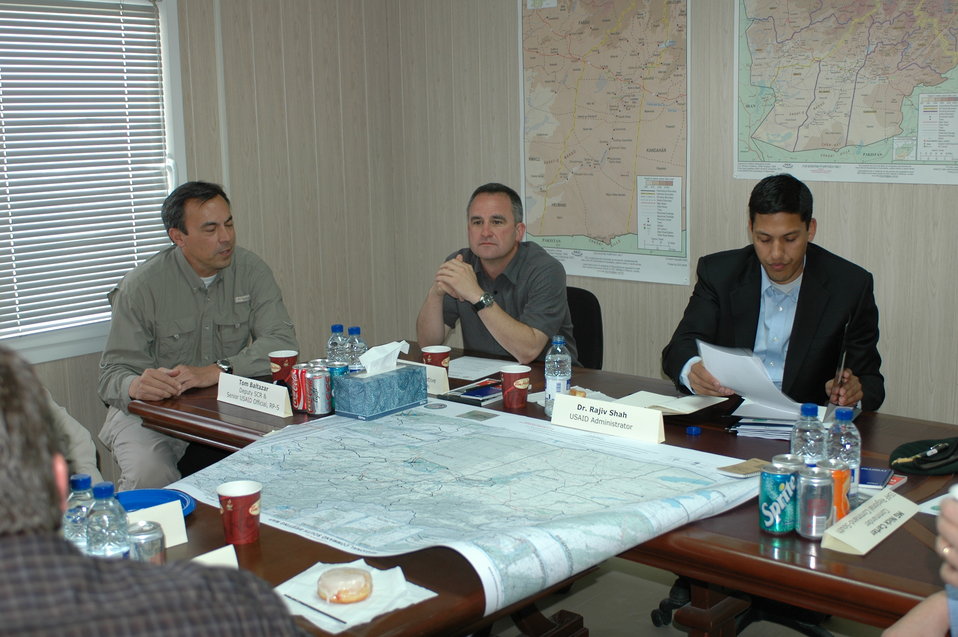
Dr Shah Visits Kandahar April 9, 2010